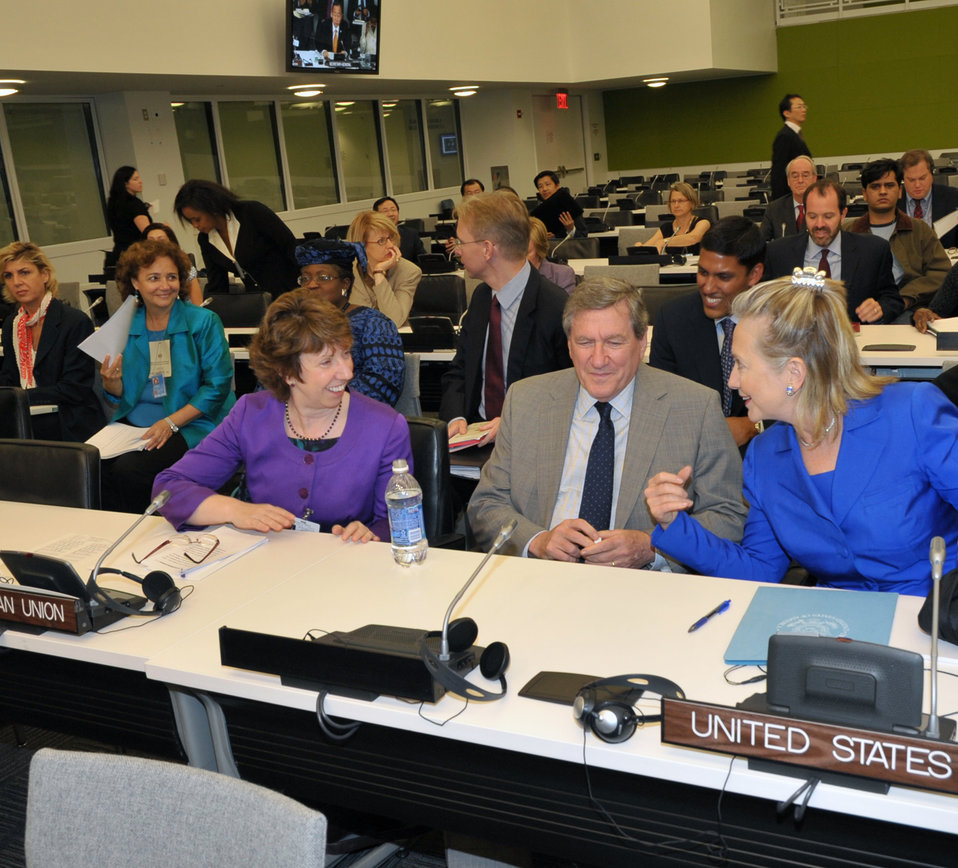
Secretary Clinton, Special Representative Holbrooke, and EU High Representative Ashton Speaks at the High-Level Ministerial Meeting on the Pakistan Flood Emergency

U.S. Secretary of State Hillary Rodham Clinton (first from right) speaks with U.S. Special Representative to Afghanistan and Pakistan Richard C. Holbrooke (center), and European Union High Representative Catherine Ashton (third from right) at the High-Level Ministerial Meeting on the Flood Emergency in Pakistan at United Nations North Lawn Building in New York, New York, on September 19, 2010. USAID Administrator Rajiv Shah is also pictured (first from the right in the second row). [State Department/ Public Domain]